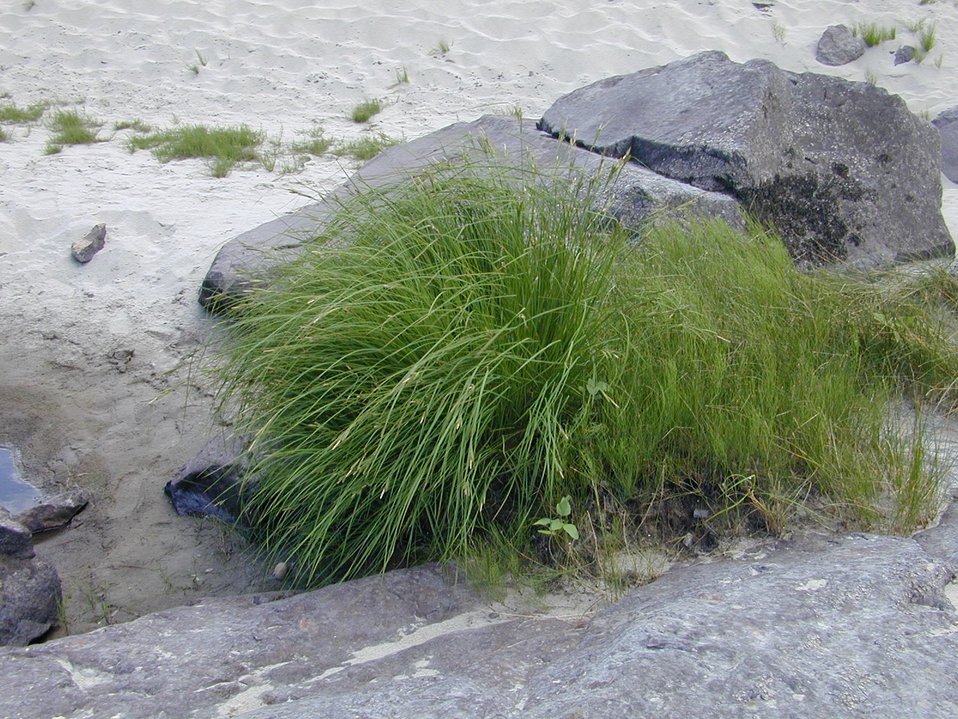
Rangeland plants Cottonwood Field Office UCSC Upper Columbia Salmon Clearwater District